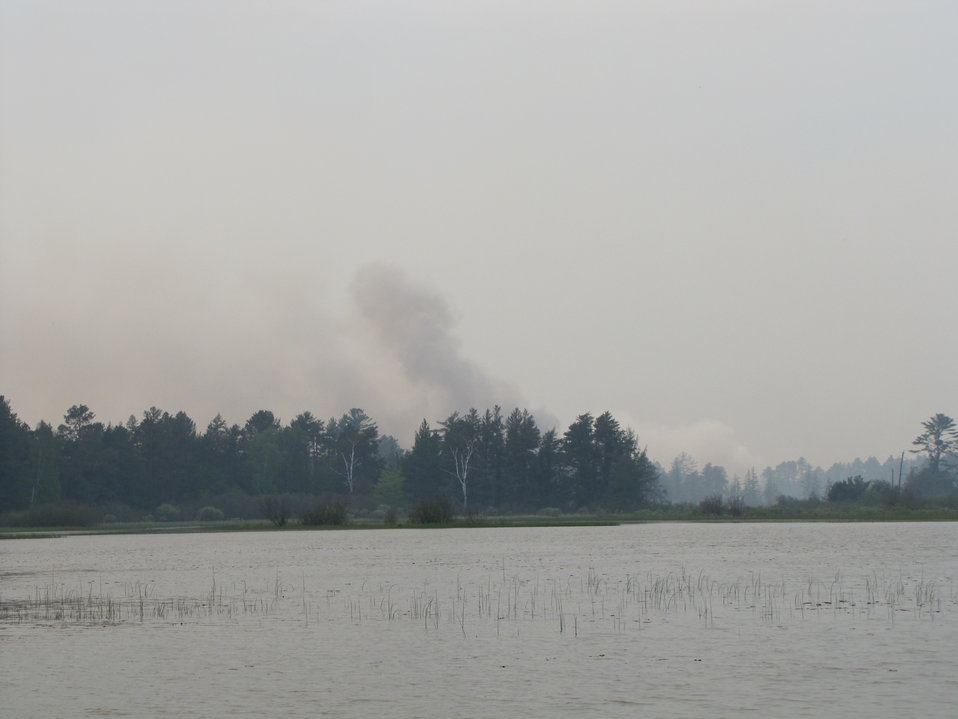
Smoke on the Water

Smoke north of the fishing loop.